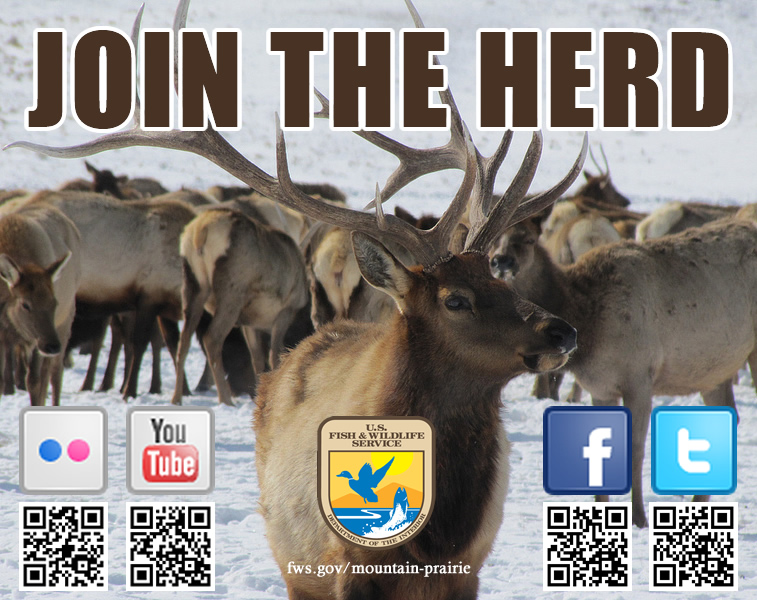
Join the Herd!

The Mountain-Prairie Region of the U.S. Fish and Wildlife Service has a number of ways for the public to connect with its digital content. Use your QR code reader to access our various social media accounts.